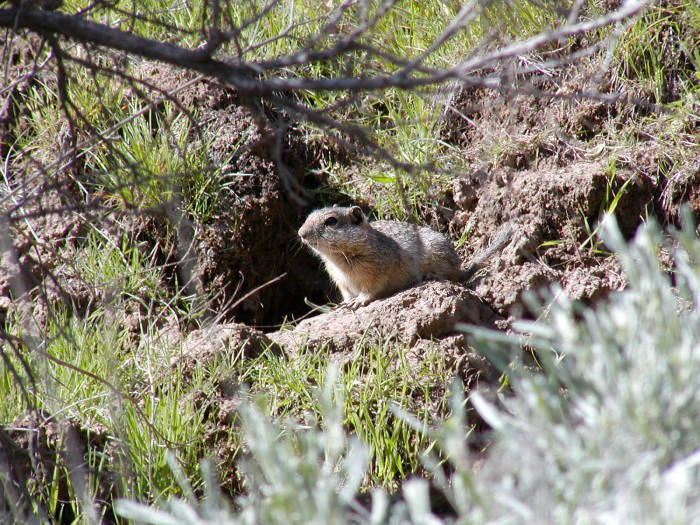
Southern Idaho Ground Squirrel